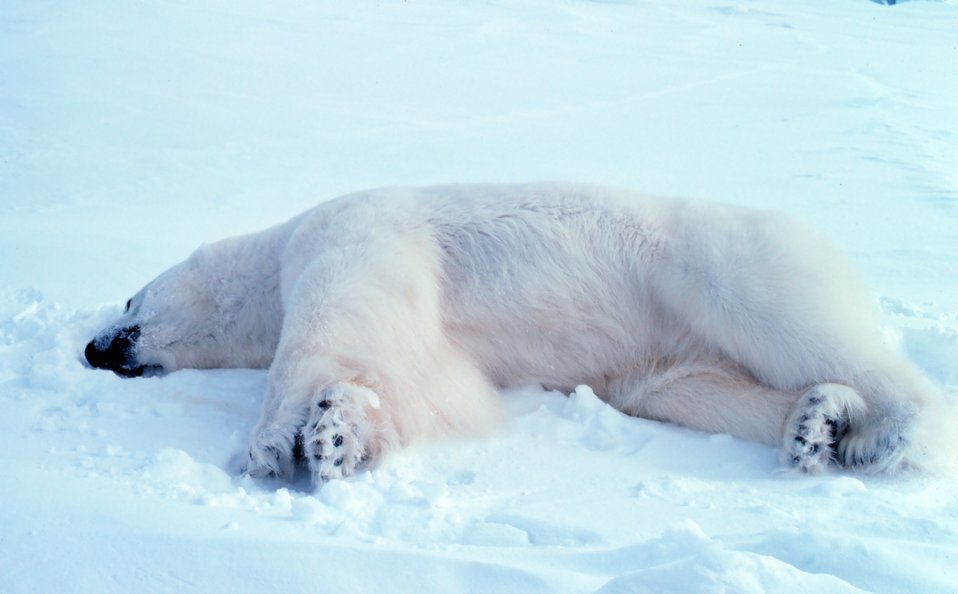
Sedated bear - Ursus maritimus - ready for measurement and tagging. Outer Continental Shelf Environmental Assessment Program studies.